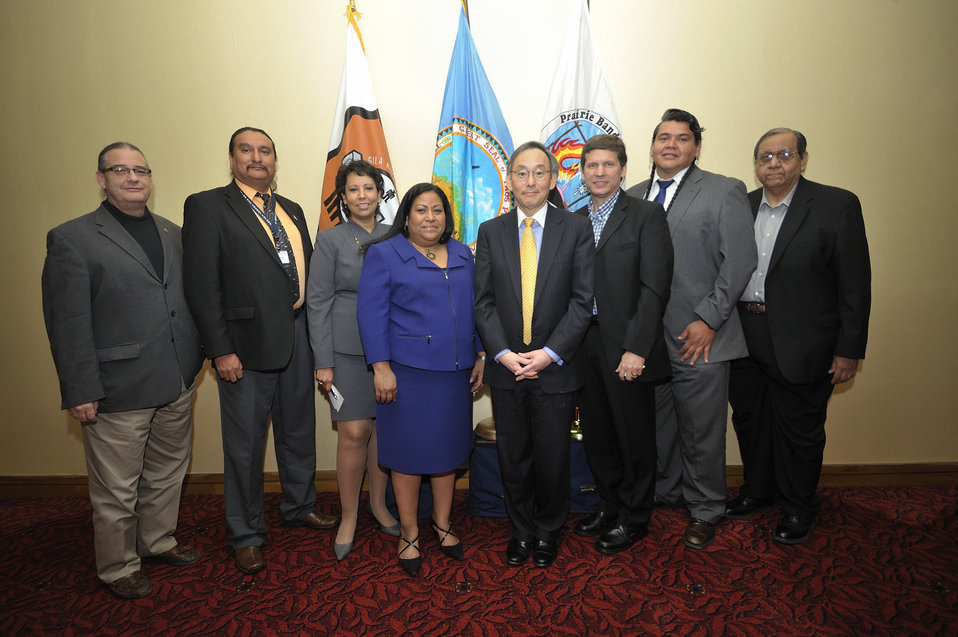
Tribal Energy Summit

From Left to Right: Osage Nation Assistant Principal Chief Scott Bighorse; Secretary Crow Tribal Council Scott Russell; DOE Indian Energy Program Director, Tracey LeBeau; Campo Band of Kumeyaay Indians Chairwoman Monica LaChappa; DOE Secretary Steven Chu; Tlingit-Haida Council 1st Vice President William Micklin; Nez Perce Tribal Executive Committee Chairman Brooklyn Baptiste, Osage Nation Principal Chief John D. Red Eagle.